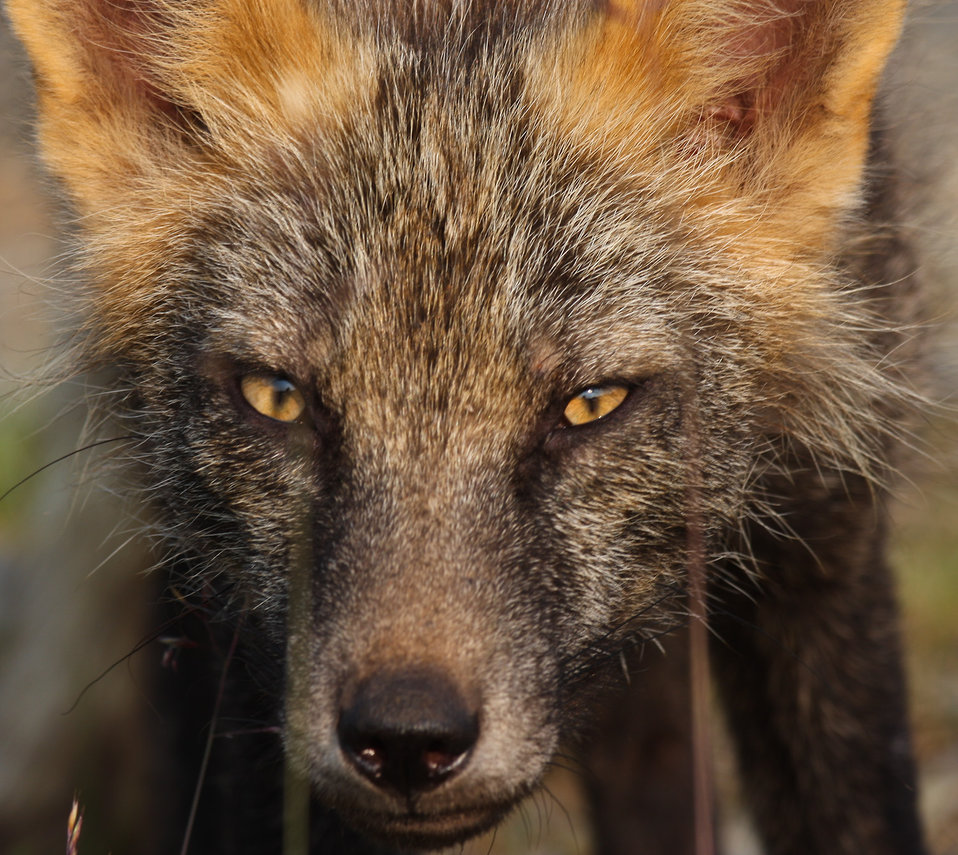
Face to face

Lisa Hupp/USFWS